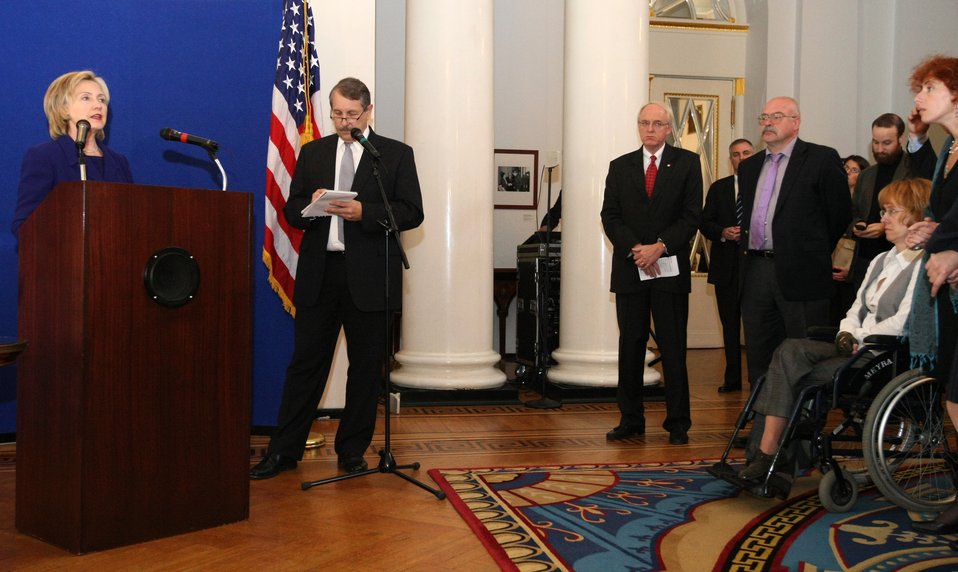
Secretary Clinton Speaks at the Civil Society Meeting

U. S. Secretary of State Hillary Rodham Clinton addresses the Civil Society Meeting at the U.S. Ambassador residence in Moscow, Russia October 14, 2009.